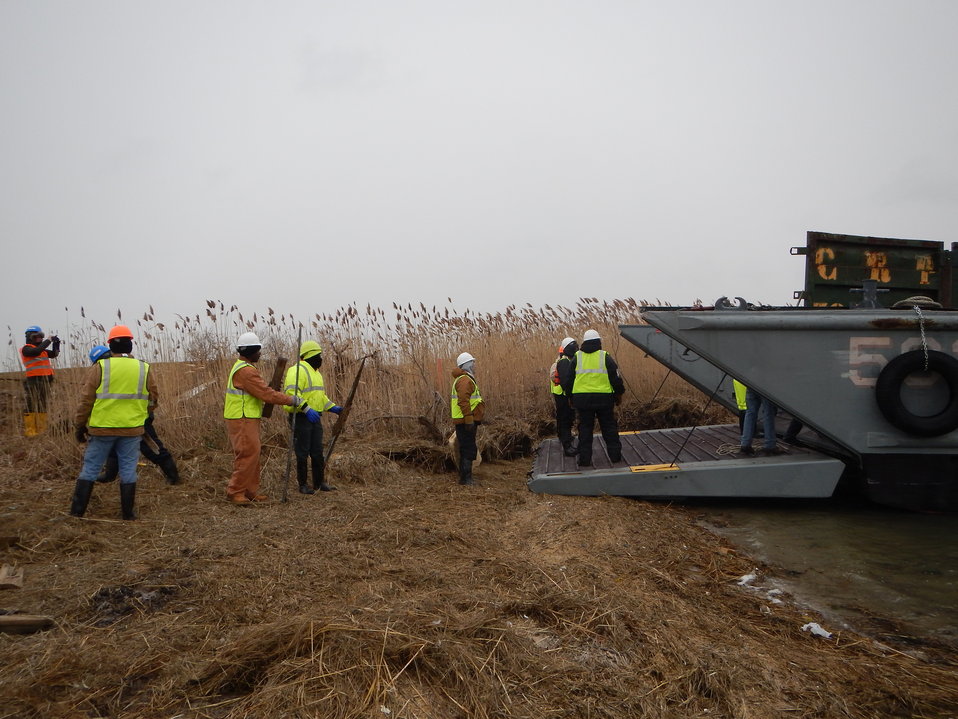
Lido Beach Cleanup-5

Cleanup crews begin a massive debris removal effort at Lido Beach Wildlife Management Area on Long Island.